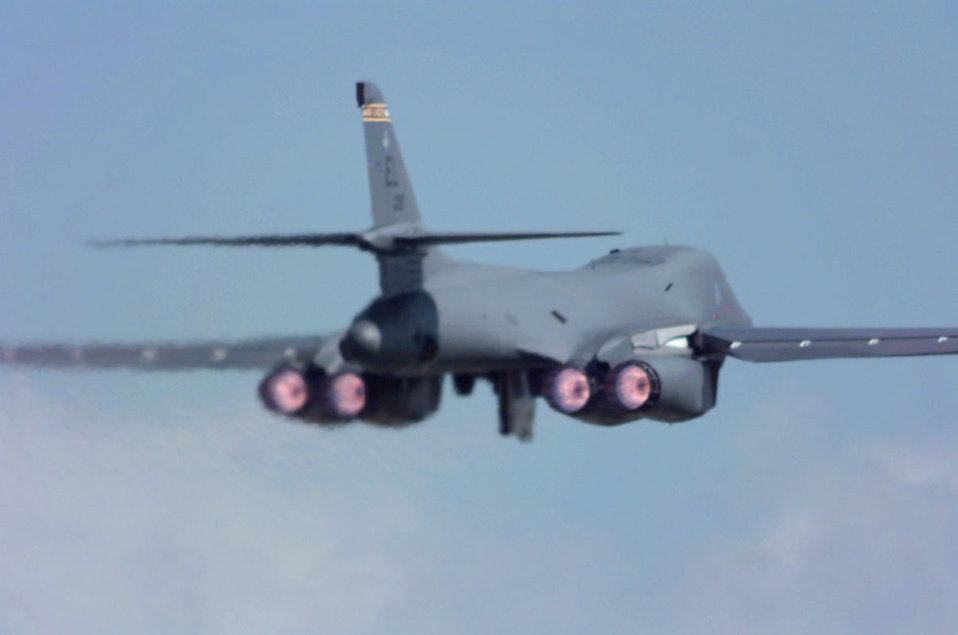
Lancer lift off

ROYAL AIR FORCE FAIRFORD, England -- A B-1B Lancer from Ellsworth Air Force Base, S.D., takes to the skies April 28, 1999. B-1Bs from the 28th Bomb Squadron are deployed here supporting Operation Allied Force.